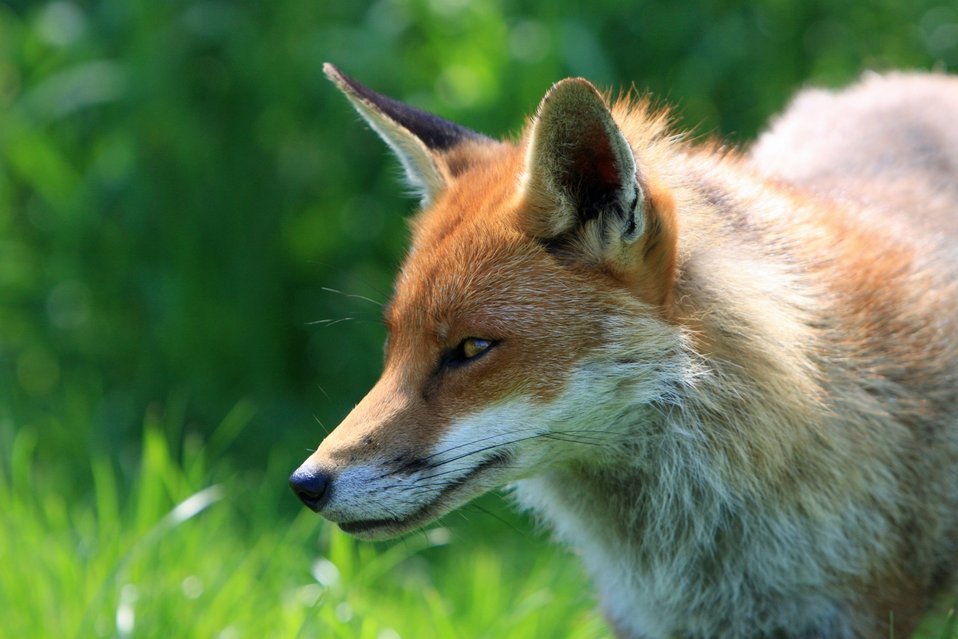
Fox portrait

Close-up of a red fox face and eyes.